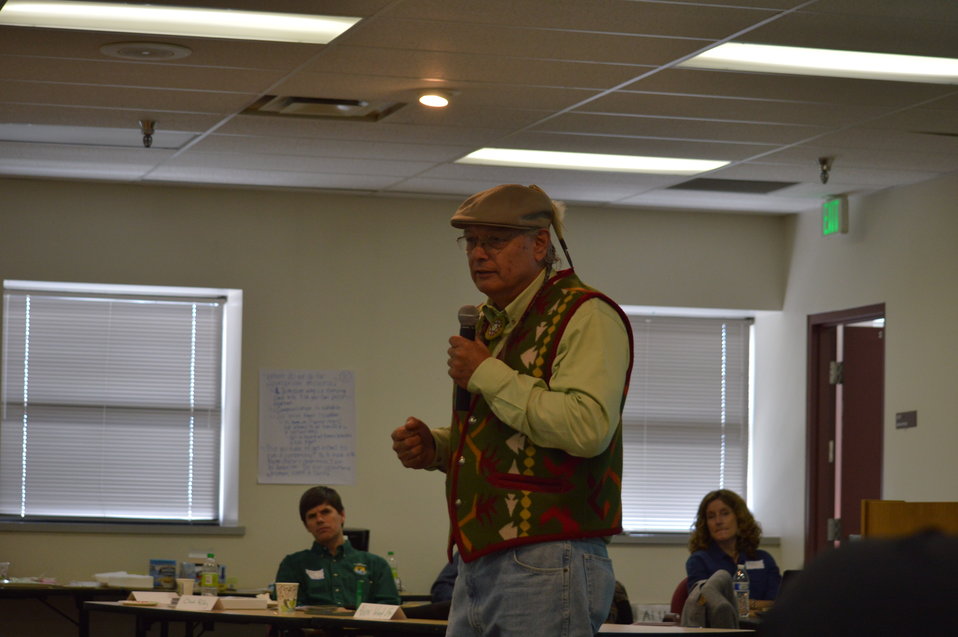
Eagle Summit III - Rick Williams

Rick Williams presents over lunch at the Eagle Summit III in Denver, Colorado on March 20, 2014 at the Rocky Mountain Arsenal National Wildlife Refuge.